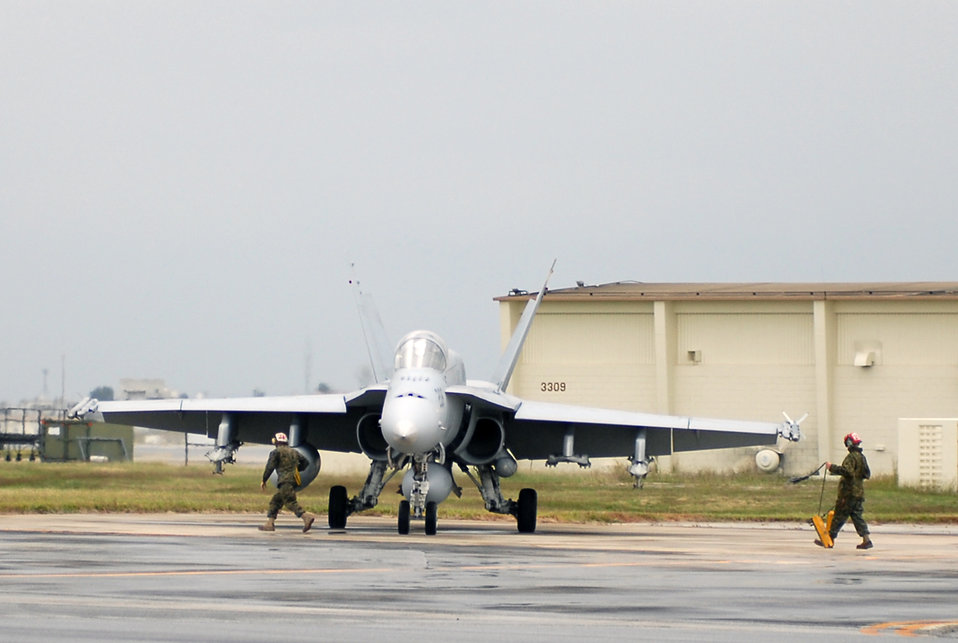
Marines to participate in Kadena readiness exercise

Marines rush to chalk an F/A-18 Hornet aircraft from Marine Aircraft Group 12 Nov. 28. Thrity-two F/A-18 Hornets from Marine Corps Air Station Iwakuni, Japan, started arriving here Nov. 28 to participate in Beverly High 08-02 and conduct other training.